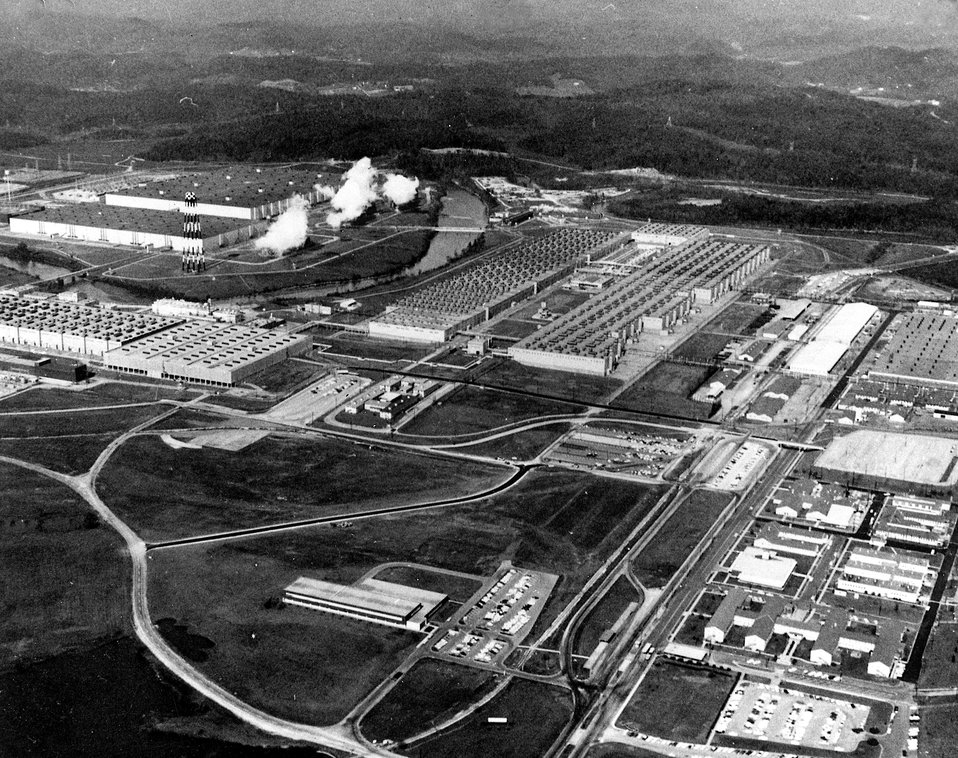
Aerial view of the Gaseous Diffusion Plant at Oak Ridge, Tennessee. Circa 1964.